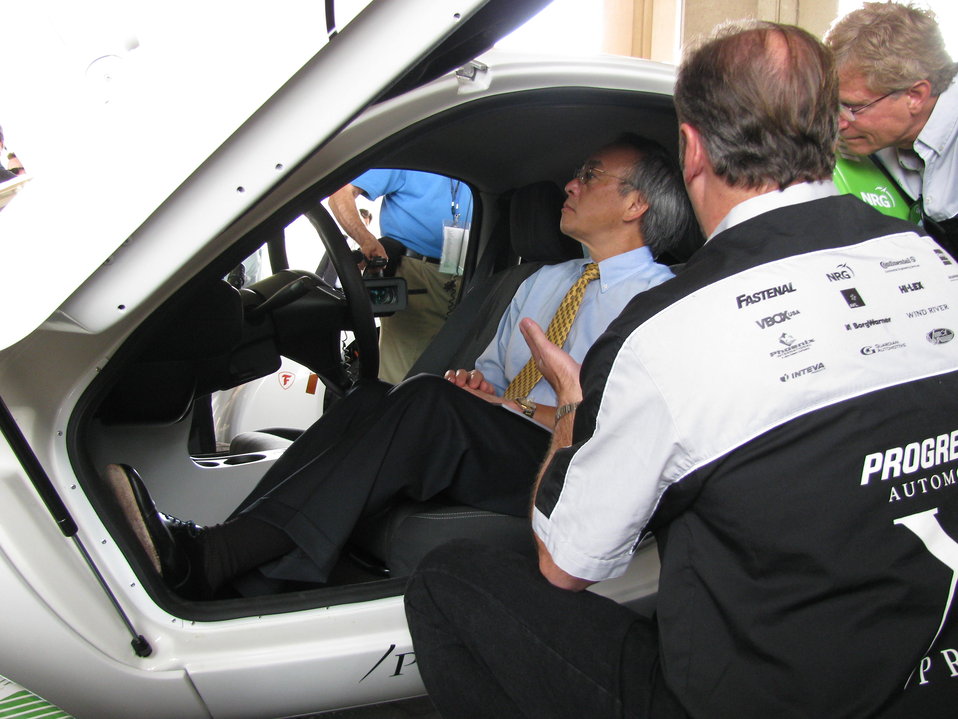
X Prize 040